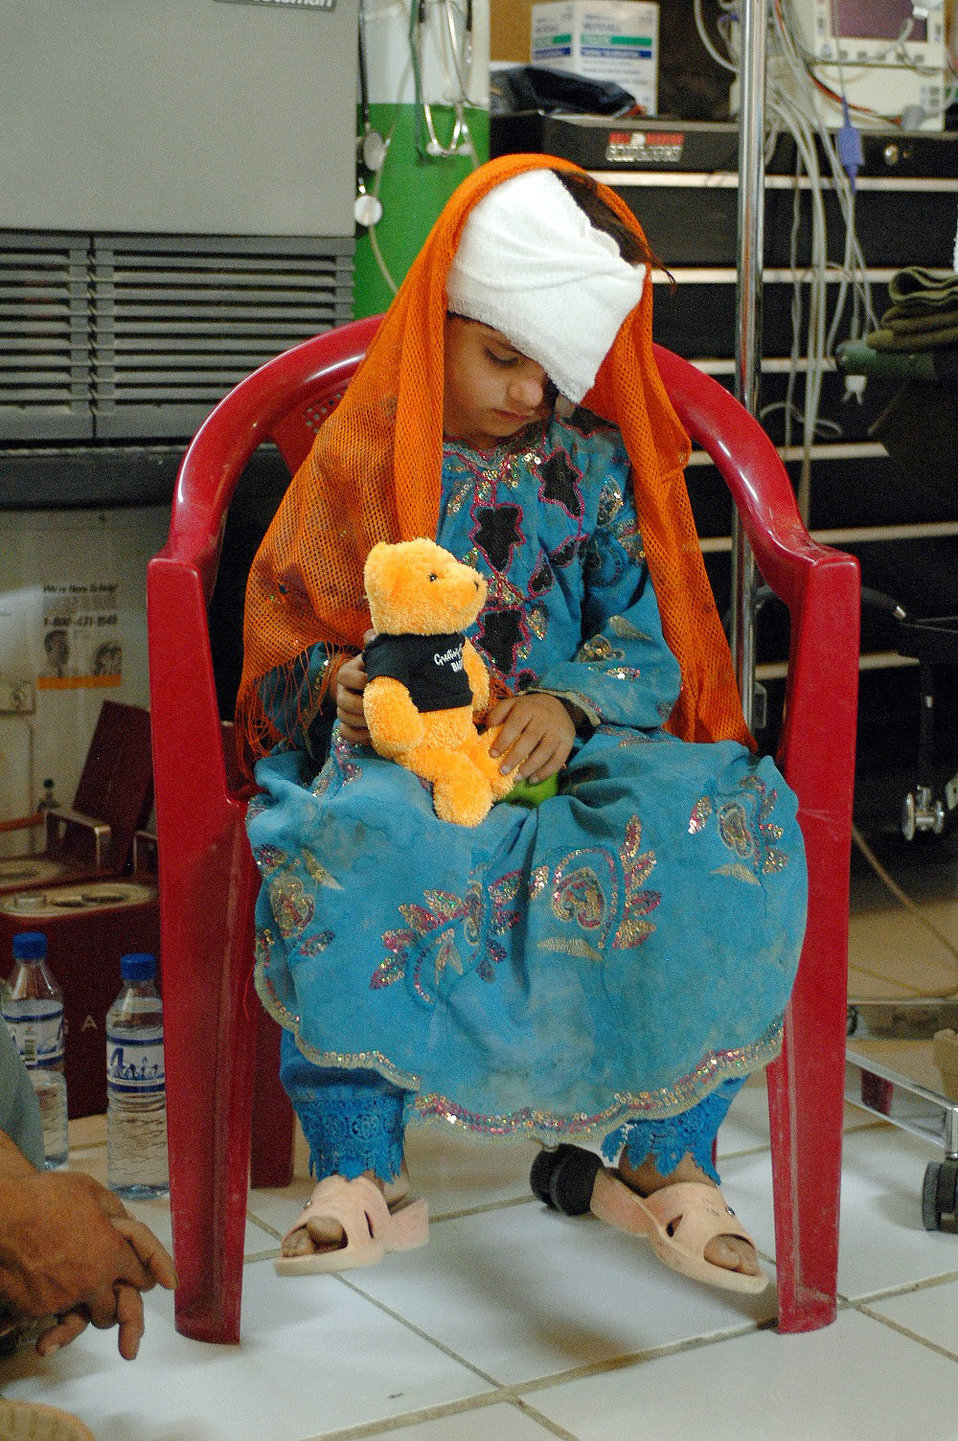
Coalition doctors remove tumor, save Afghan girl's life

Gulzana Haqim, a 6-year-old Afghan girl, waits in a U.S. Special Forces medical facility in Afghanistan before being transported to Craig Joint Theater Hospital on Bagram Air Field for examination on June 9. The young girl was diagnosed with a tumor over her eye -- an affliction that has an extremely low chance of survival in Afghanistan. However, Coalition doctors treated her and she is on her way to recovery.